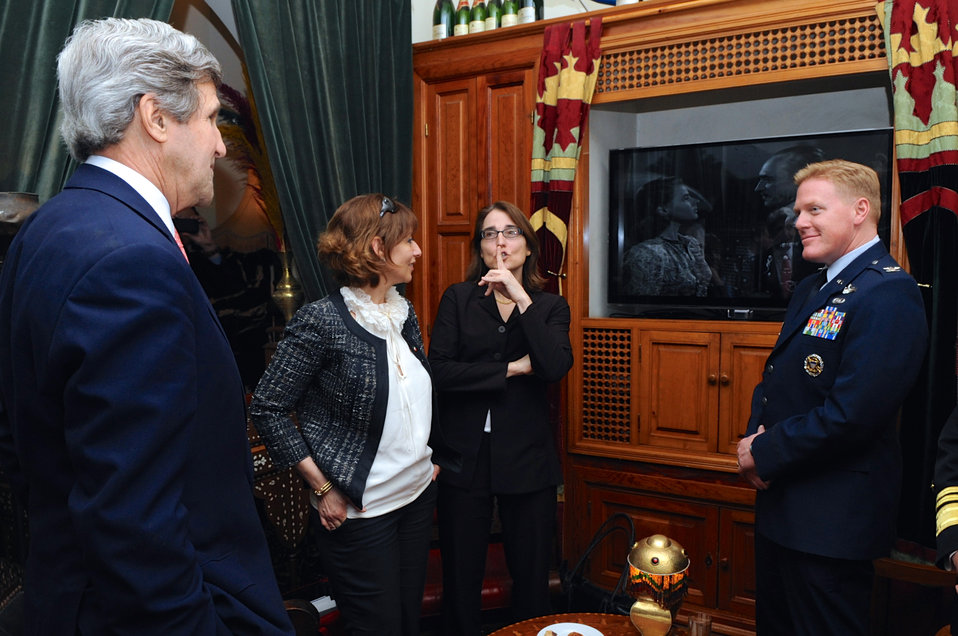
Secretary Kerry Views 'Casablanca' During Visit to Rick's Cafe in Morocco

U.S. Secretary of State John Kerry watches a scene from the film 'Casablanca' during a visit to Rick's American Cafe - started by a former State Department Foreign Service Officer - in Casablanca, Morocco, on April 4, 2014.